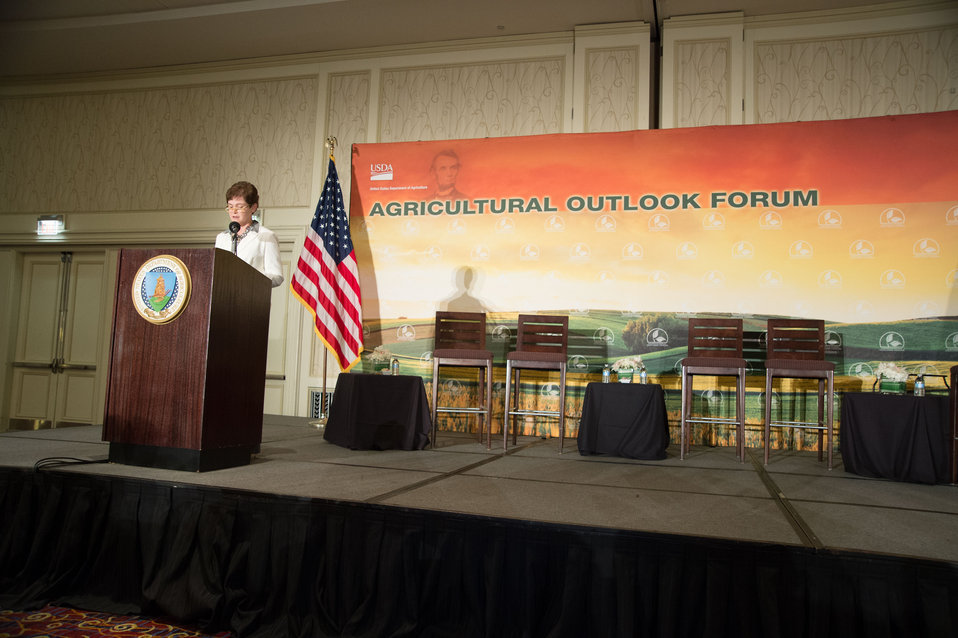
Agriculture Deputy Secretary Krysta Harden makes brief remarks at the opening of the 2014 Agricultural Outlook Forum in Arlington, VA., on Thursday, Feb. 20, 2014. The U.S. Department of Agriculture's (USDA) annual Agricultural Outlook Forum brings together the agricultural community to discuss policy, trade, science, rural development, and the economic outlook for the coming year. The Forum also focuses on forestry, health and nutrition issues, and the changing dynamics and face of rural America. USDA’s annual Agricultural Outlook Forum brings together the agricultural community to discuss policy, trade, science, rural development, and the economic outlook for the coming year. The Forum also focuses on forestry, health and nutrition issues, and the changing dynamics and face of rural America.USDA photo by Bob Nichols.